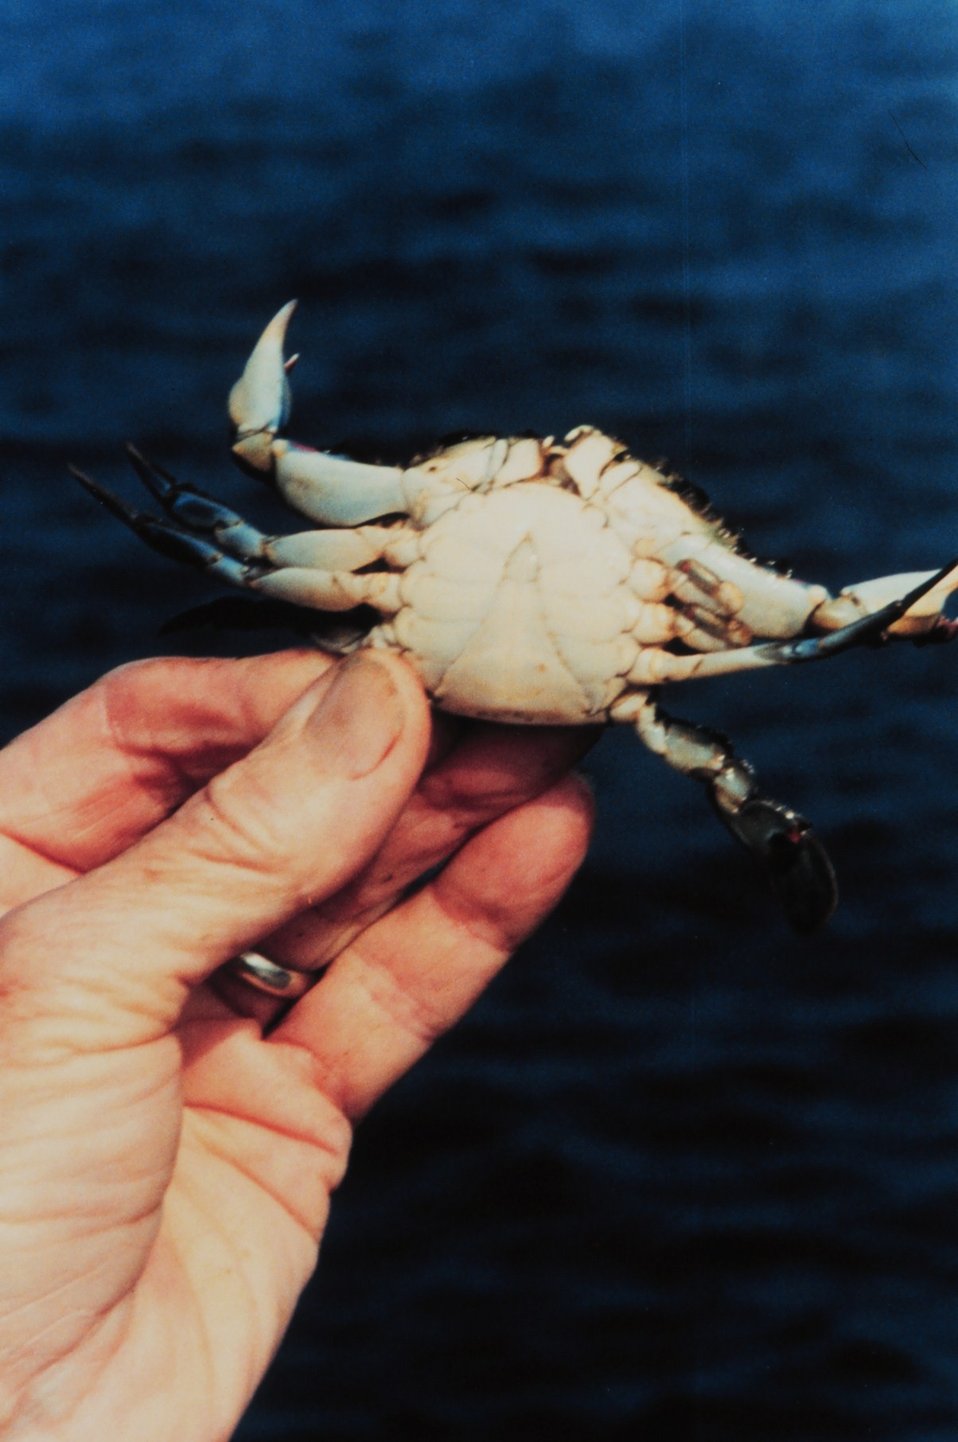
An immature female blue crab (Callinectes sapidus). Sex and maturity determined by the 'V'-shaped apron.